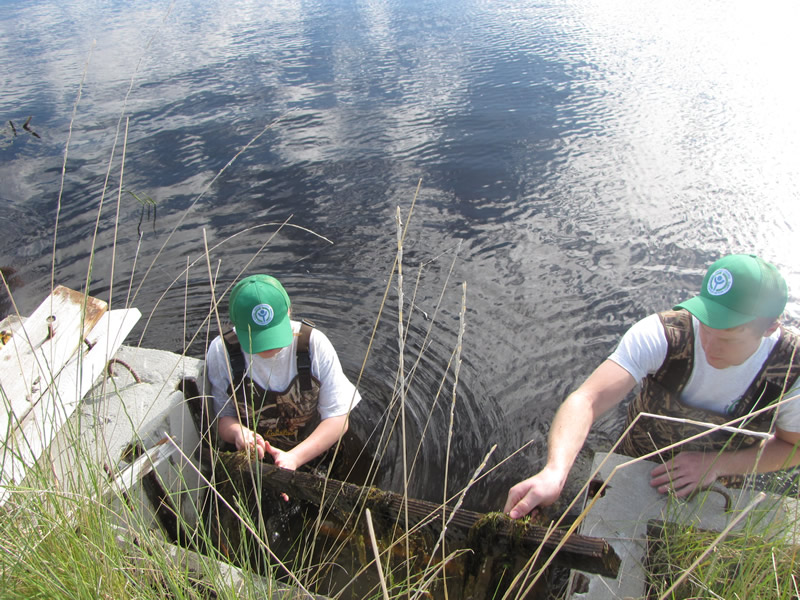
Weed control

Youth Conservation Corps crew cleaned and weeded around a water control structures to eliminate potential safety hazards related to weed growth. Approximately 40 structures were cleared.